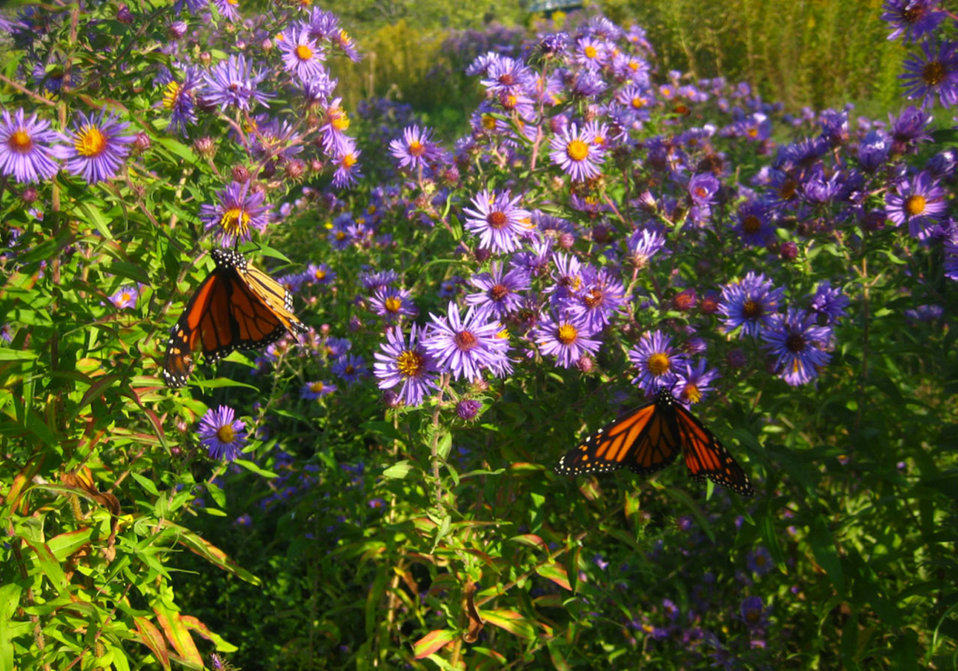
Two monarch butterflies

2 monarch butterflies on purple flowers.